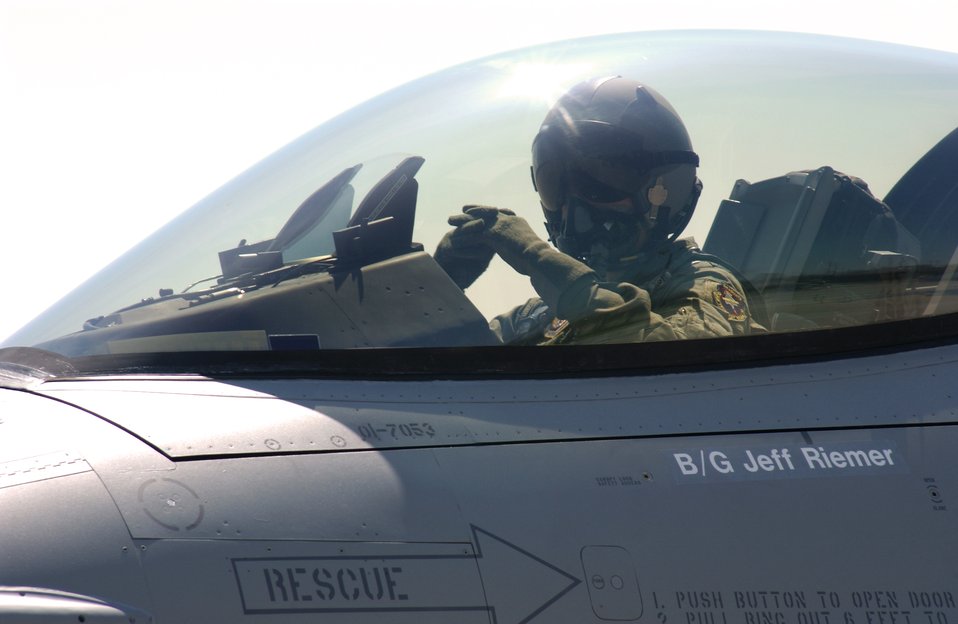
Air Force receives last F-16 Falcon

SHAW AIR FORCE BASE, S.C. -- Brig. Gen. Jeff Riemer delivers the last new Air Force F-16 Fighting Falcon here March 18. General Riemer, who was the System Program Office director when the contract for F-16s was awarded, flew the Falcon from the Lockheed Martin plant in Forth Worth. While Lockheed will continue to produce F-16s for international coalition partners, this aircraft is the last of 2,231 F-16s produced for the Air Force. The first delivery was in 1978. General Riemer is now the director of operations at the Air Force Materiel Command headquarters here.